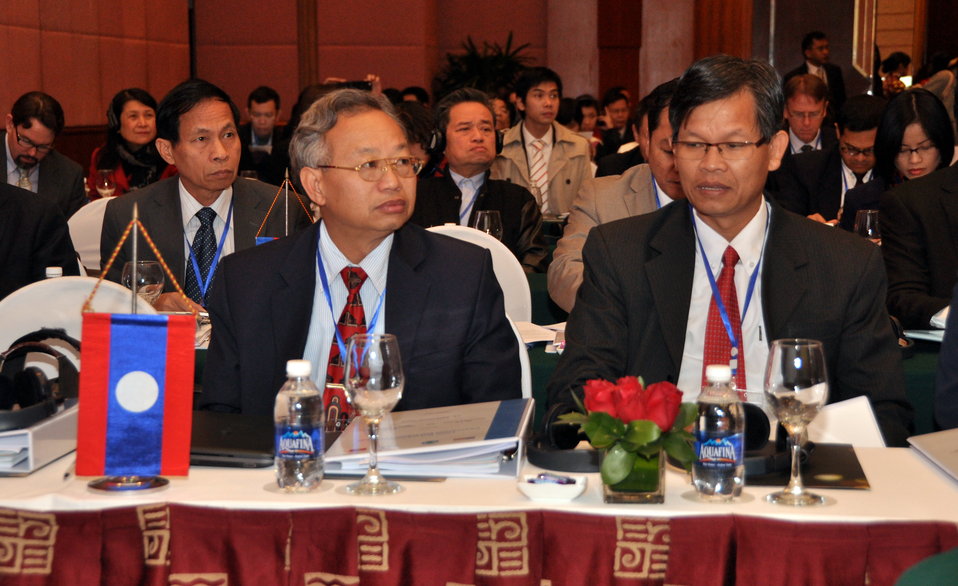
Delegates to the LMI Infrastructure Best Practices Exchange

Hanoi: January 14, 2013